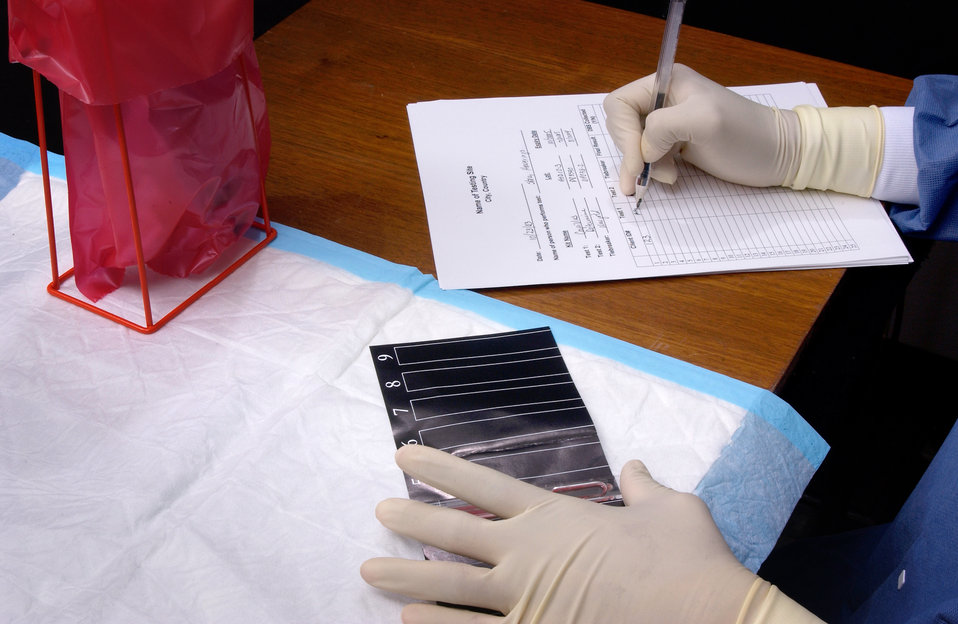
Carefully read the aggregation results in the viewing window and record this data on the appropriate worksheet. (Step 12 of 12)